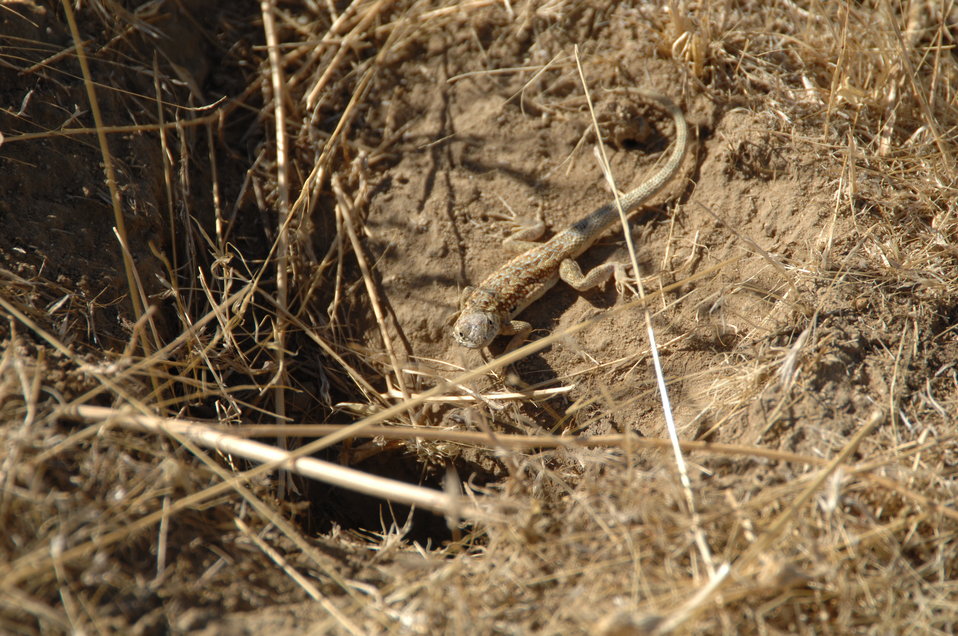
Lizard on the Carrizo Plain